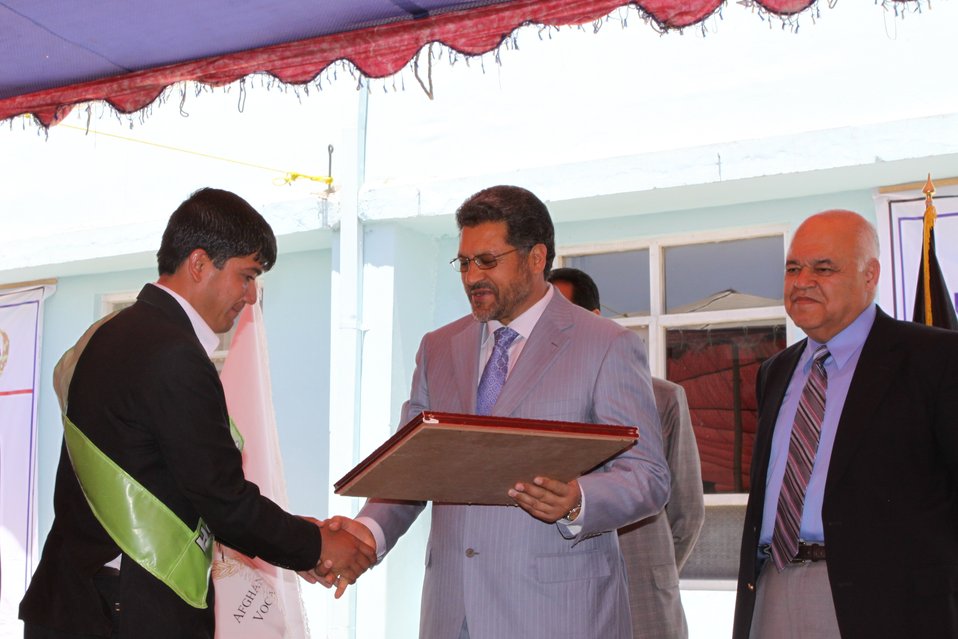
100522 ATVI Graduation 116